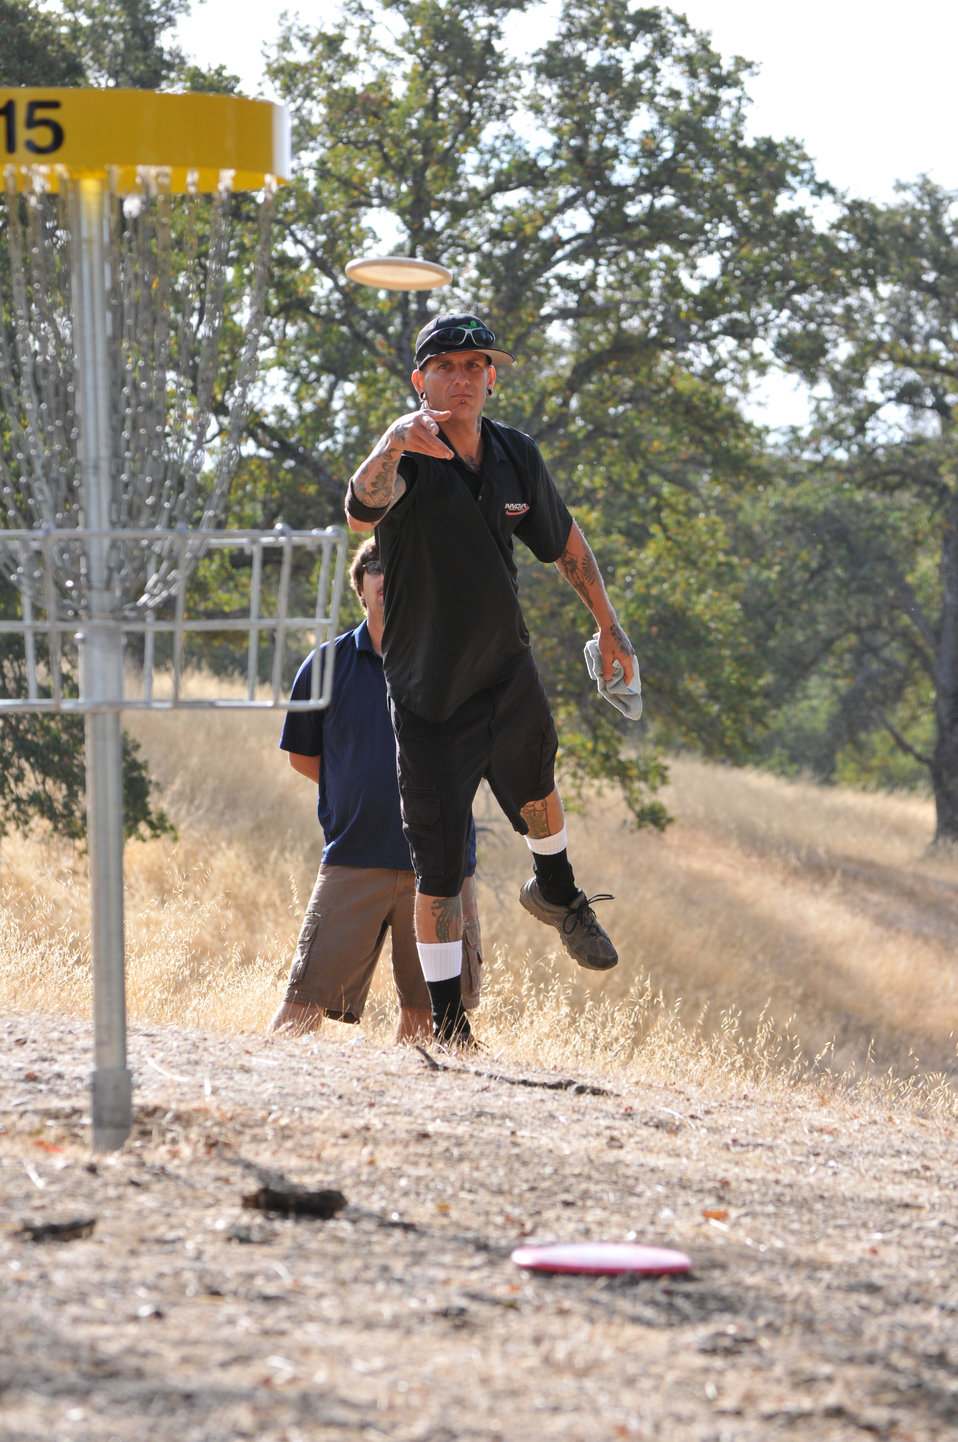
BLACK BUTTE LAKE, Calif. (Oct. 18, 2010) -- A disc golfer putts during the Professional Disc Golf Association's Norcal Series Championships here Oct. 16. The U.S. Army Corps of Engineers Sacramento District’s Black Butte hosted the tournament Oct. 15-17 at its new disc golf course, built on park lands by The Orland Aces disc golf club under a partnership with the Corps. More than 150 disc golfers from as far as Texas competed in the tournament.